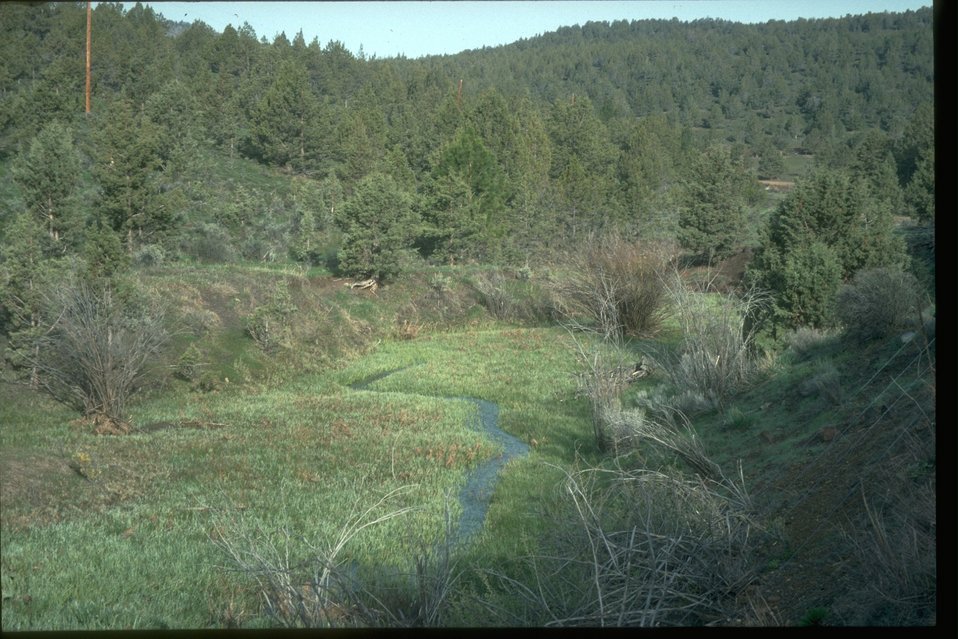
A spring and wetland in central OR.